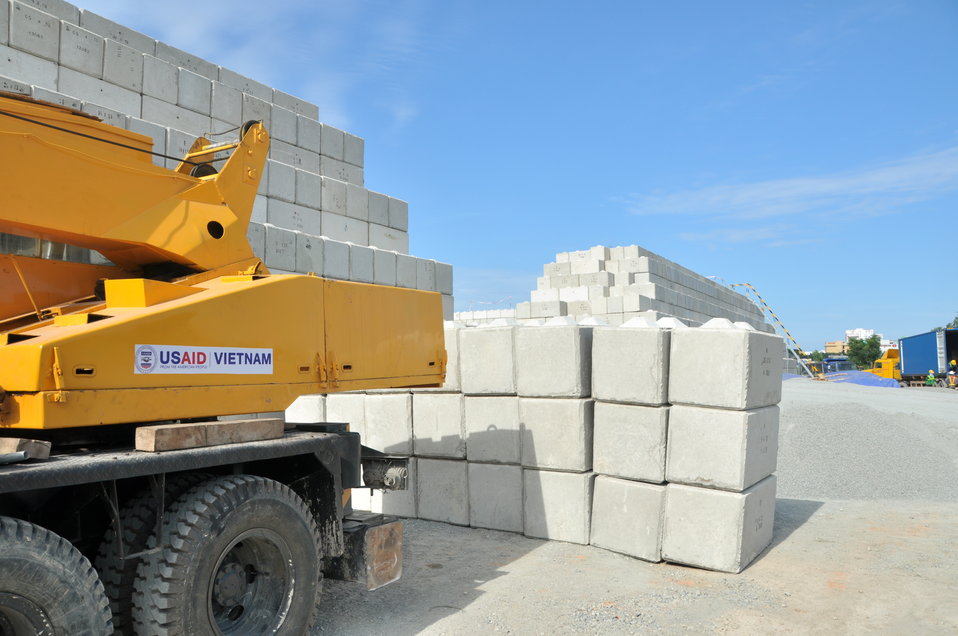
Site construction at the Environmental Remediation of Dioxin Contamination at Danang Airport

Progress at the Danang Airport remediation site
April 23, 2013